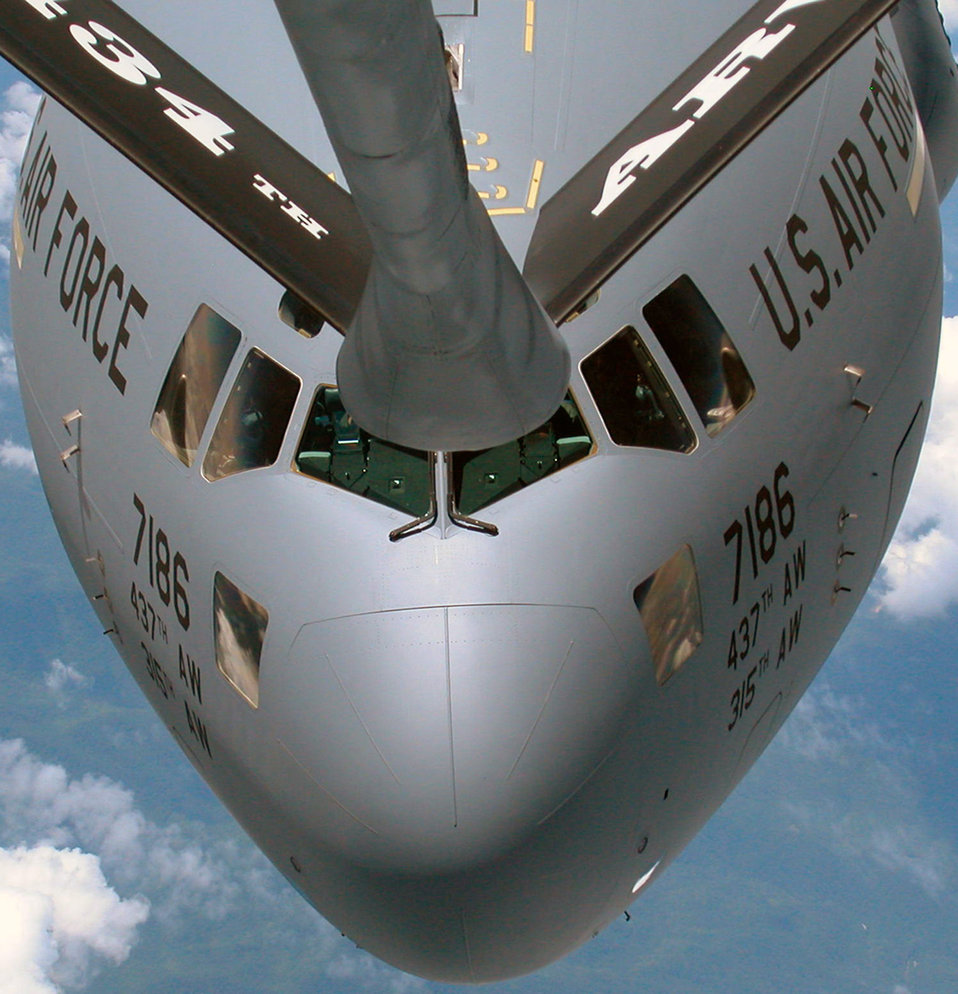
Fill 'er up

A C-17 Globemaster III from Charleston Air Force Base, S.C., pulls up close to receive fuel from a KC-135 Stratotanker from the 434th Air Refueling Wing at Grissom Air Reserve Base, Ind.